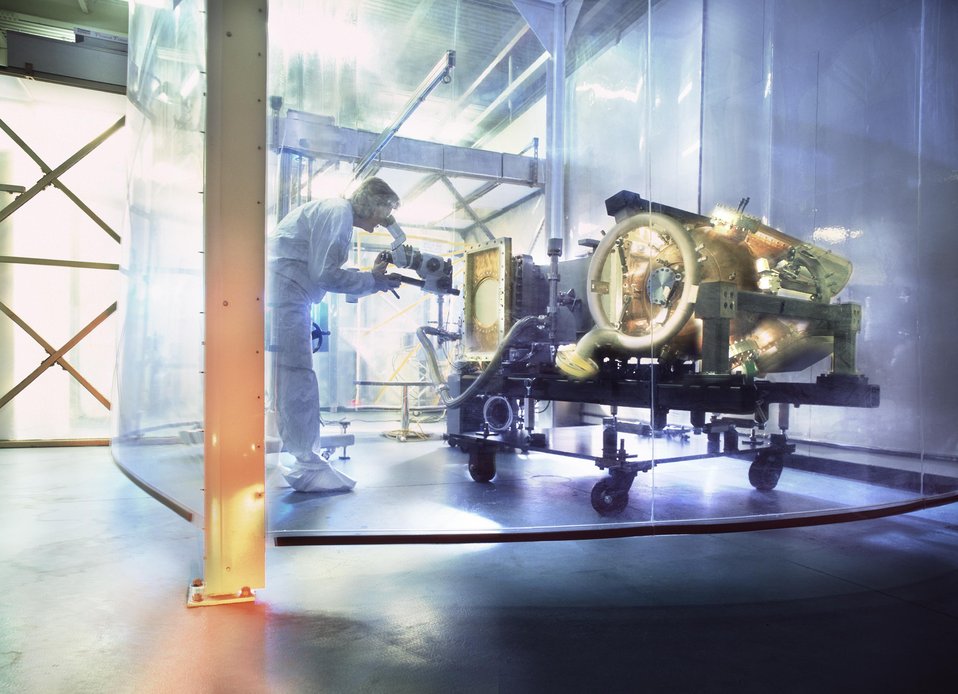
TECHNICIAN CHECKING A RADIO FREQUENCY ACCELERATING CAVITY AT THE STANFORD LINEAR ACCELERATOR.

SLAC IS ONE OF WORLD'S LEADING RESEARCH LABORATORIES. LOCATED AT STANFORD UNIVERSITY, MENLO PARK, CALIFORNIA, ITS MISSION IS TO DESIGN, CONSTRUCT AND OPERATE STATE OF THE ART ELECTRON ACCELERATORS AND RELATED EXPERIMENTAL FACILITIES FOR USE IN HIGH ENERGY PHYSICS AND SYNCHROTRON RADIATION RESEARCH.